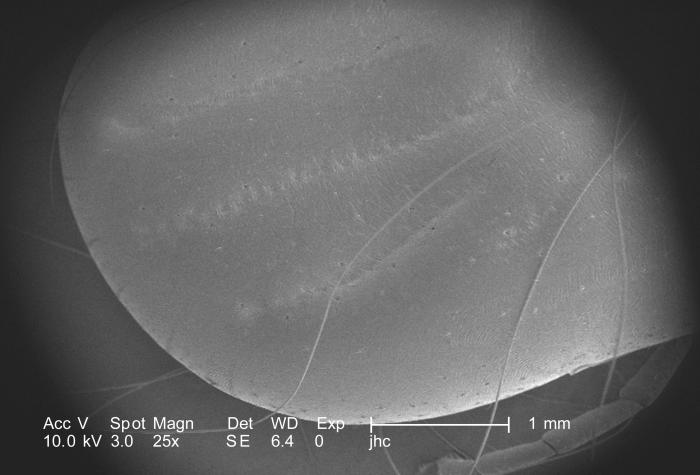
Under a low magnification of 25X, this scanning electron micrographic (SEM) image depicted a dorsal view of an unidentified engorged female tick which had been extracted from the skin of a pet cat while in the process of obtaining its blood meal. Seen here, is the distal half of the tick's blood-engorged abdomen.Note in PHIL 9959 and 9960, that in the case of another tick specimen, its entire dorsal abdomen is covered by its chitinous scutum, or 'shield', categorizing it as a male. In this specimen, the scutum only partially covers the dorsal abdomen, which identifies this tick as a female.Ticks belong to the Phylum Arthropoda, due to the fact that they maneuver upon jointed ( 'Arthro') legs ('poda'), as well as the Class Arachnida, for they've eight of these legs, unlike insects, which use six legs to move about.